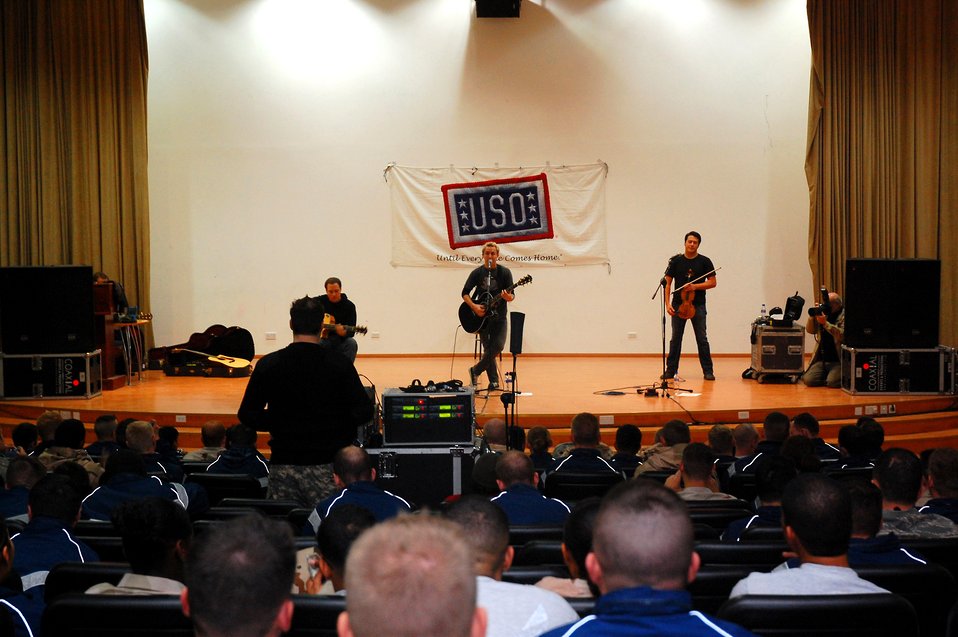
Yellowcard rocks servicemembers in Southwest Asia

The Yellowcard band performs one of their songs Jan. 12 at a Southwest Asia air base. The tour was a way for the band to say thank you to American servicemembers on their five-day United Service Organizations' tour.